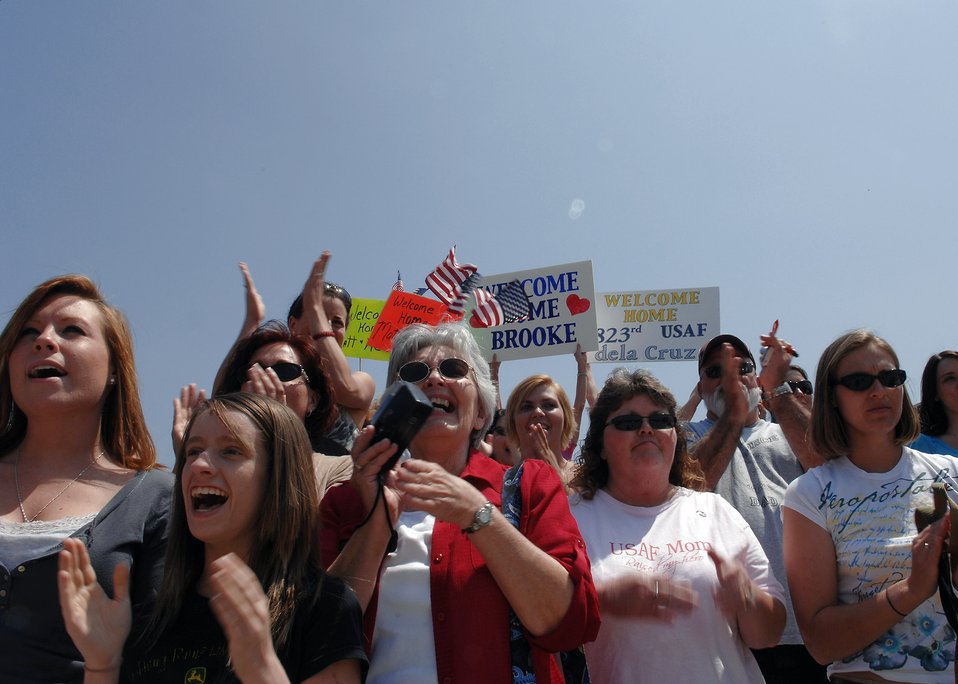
Welcome home!

Family members, friends and co-workers cheer as Airmen of the 823rd Security Forces Squadron return from a six-month deployment April 29 at Moody Air Force Base, Ga. Members of the 823rd SFS returned from a six-month deployment to Camp Bucca, Iraq. All of the unit's Airmen and military working dogs returned home safely.